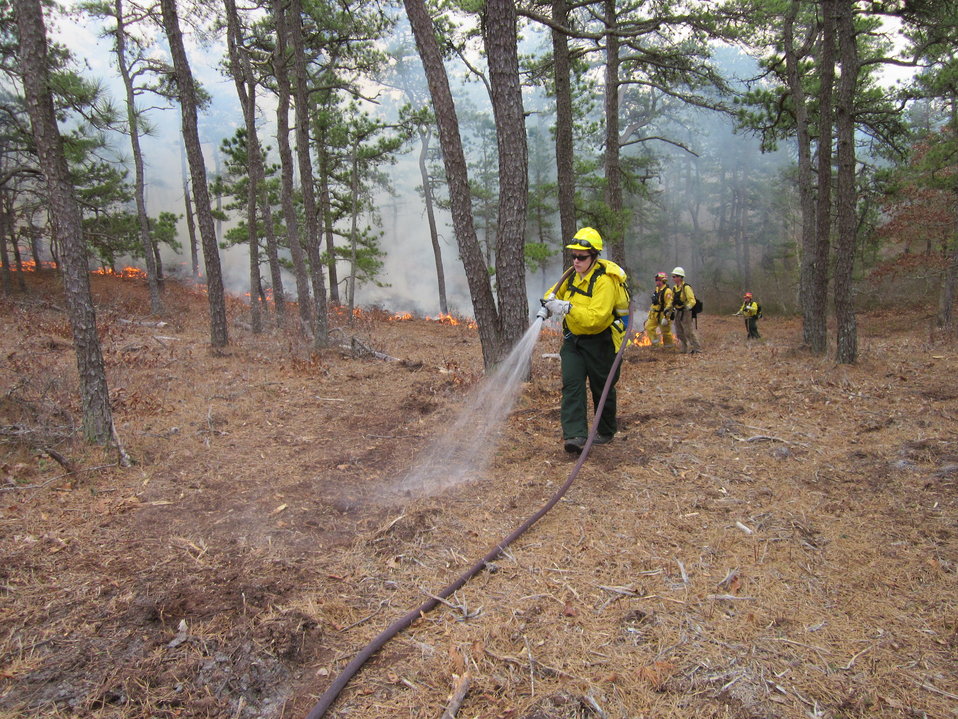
Preparing the Line

Mashpee, Massachusetts, April 5, 2012. Kate Iaquinto, a wildlife biologist for Monomoy National Wildlife Refuge works at a controlled burn at the Town of Mashpee Holland Hill Barrens area of Mashpee National Wildlife Refuge. Iaquinto helped keep the controlled burn contained by keeping its west flank watered. The burn reduced fire risk to neighboring homes and improved habitat for the New England cottontail. It was conducted by the Town of Mashpee, U.S. Fish and Wildlife Service, State of Massachusetts Department of Conservation and Recreation, and Northeast Forest and Fire Management.